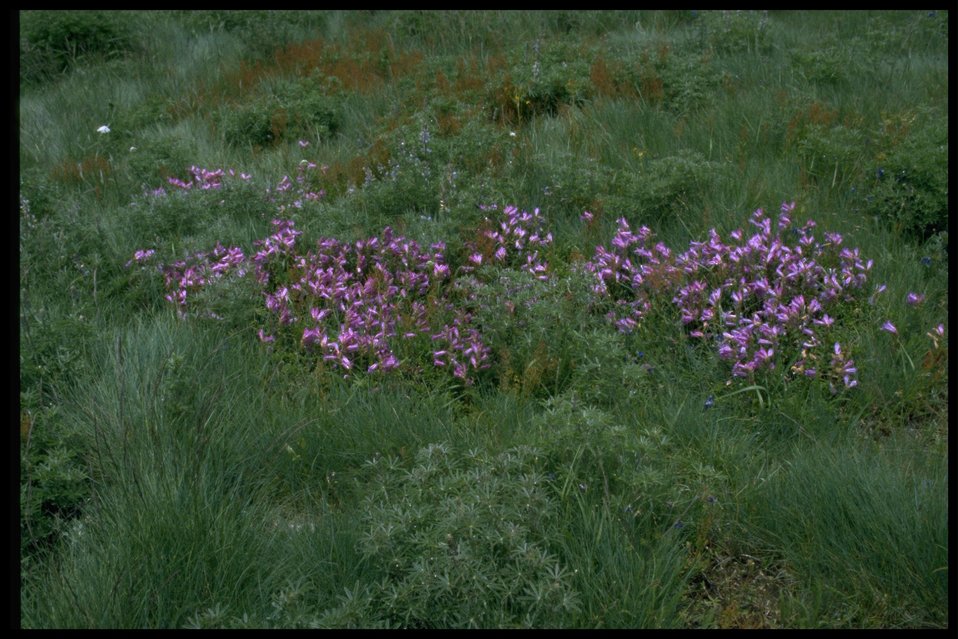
Wide shot of wildflowers (Penstemon)/